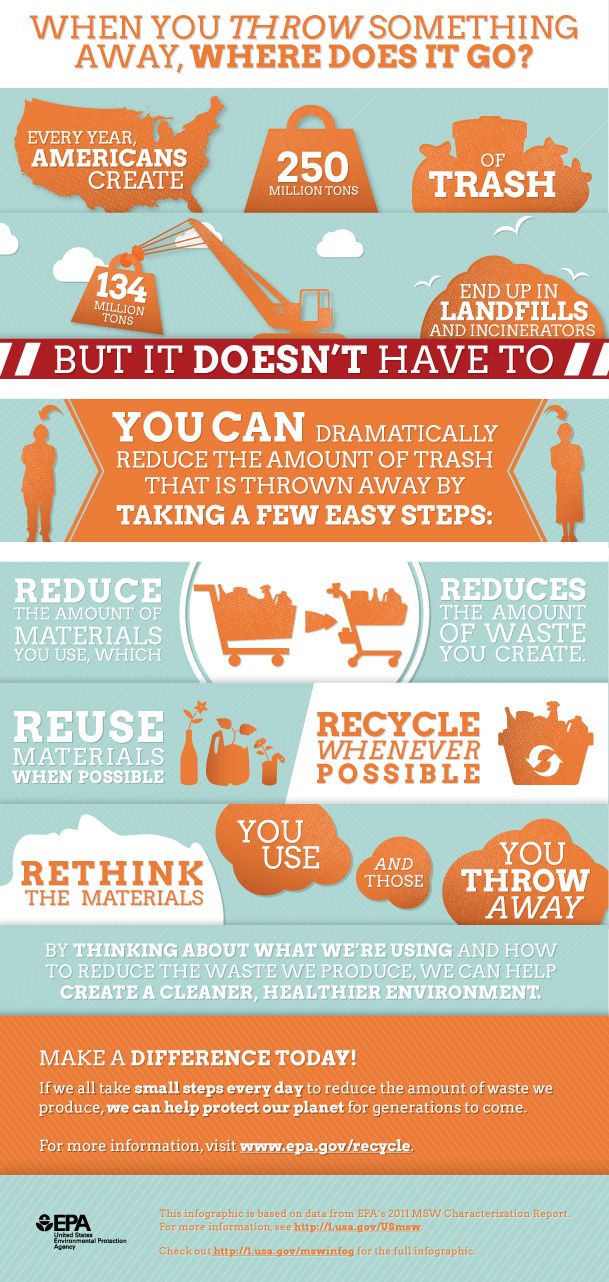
When you throw something away, where does it go?

What you throw away isn’t always trash! Think of it more like materials that can be reused and recycled.

Data based on the full 2011 Municipal Solid Waste Characterization Report: go.usa.gov/bPxY